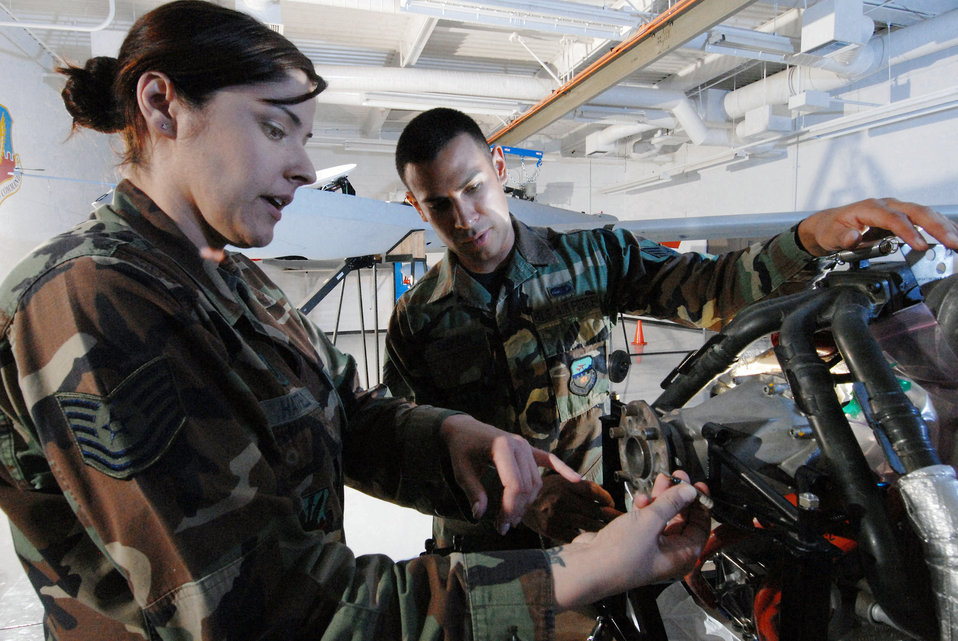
Predator maintenance

Tech. Sgt. Rebecca Hatfield (left), an instructor with Field Training Detachment 26 of the California Air National Guard's 163rd Maintenance Group, shows the components of the engine of an MQ-1 Predator unmanned aircraft to Staff Sgt. Carlos Barrera Oct. 15. Sergeant Barrera is a crew chief with the 163rd Reconnaissance Wing at March Air Reserve Base, Calif. Airmen with Det. 26 train active duty, Reserve and Air National Guard personnel on Predator maintenance operations.